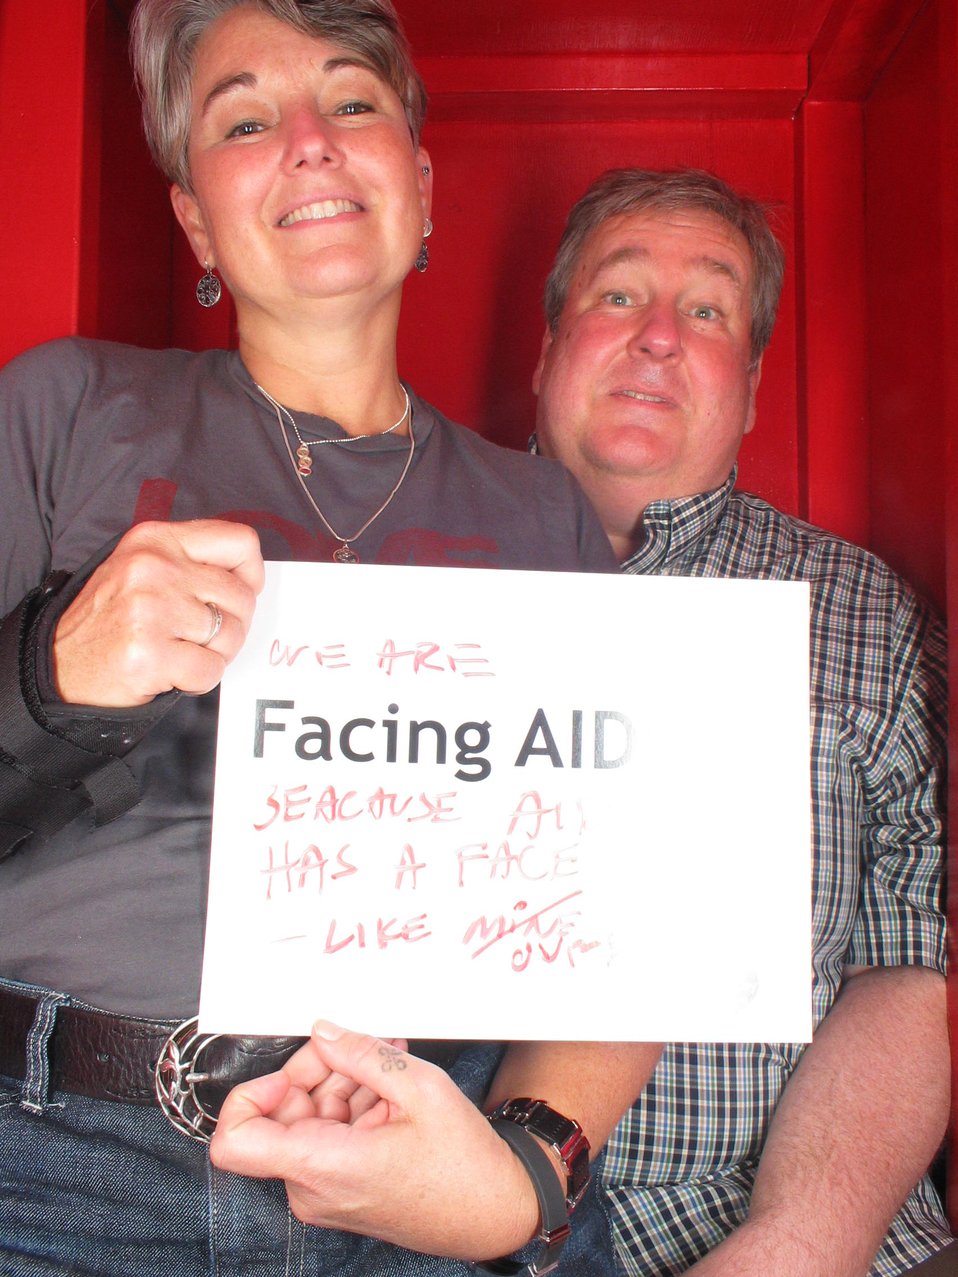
We are Facing AIDS because AIDS has a face like ours.